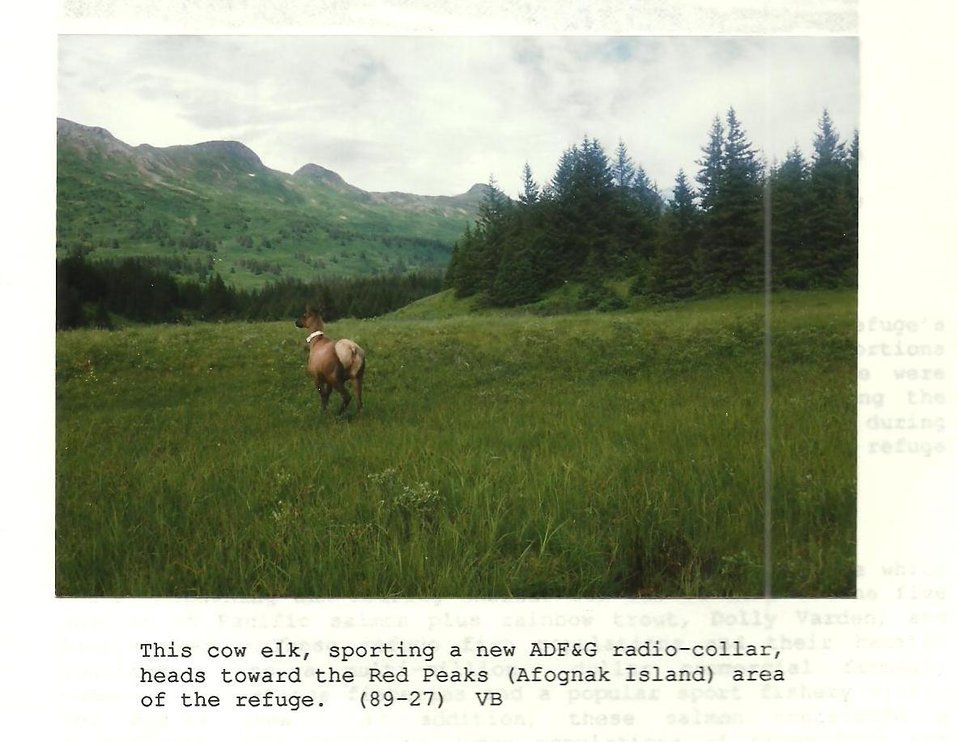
(1989) Collared Elk

Credit: USFWS

Source and Contact: Kodiak National Wildlife Refuge